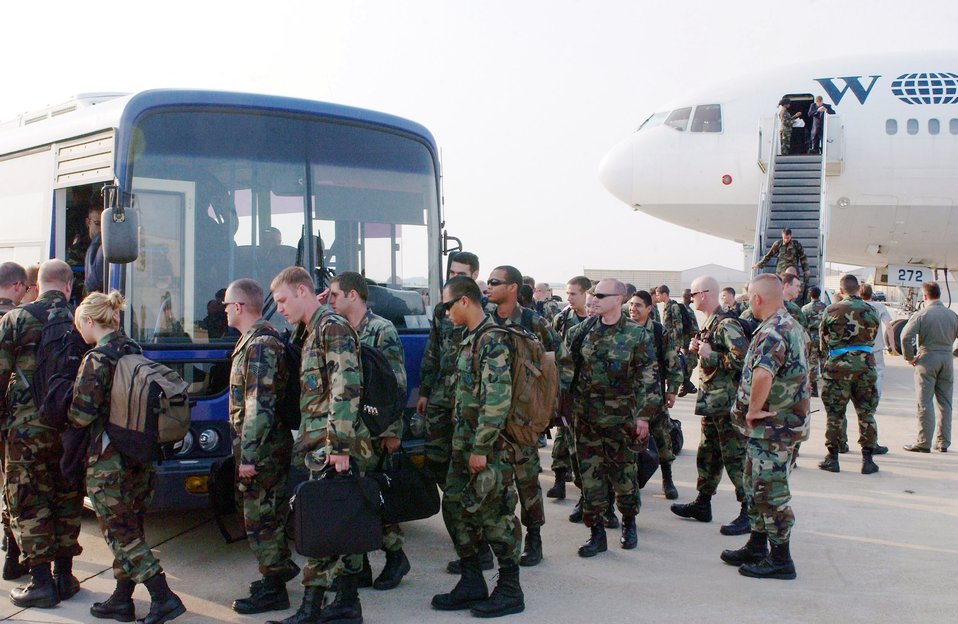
USAFE fighter squadron deploys to Kunsan

Airman from the 555th Fighter Squadron, Aviano Air Base, Italy, load onto a bus here at Kunsan Air Base, Republic of Korea for their 120 day deployment. This is the first time that a US Air Forces in Europe base has deployed to a Pacific Air Force base.